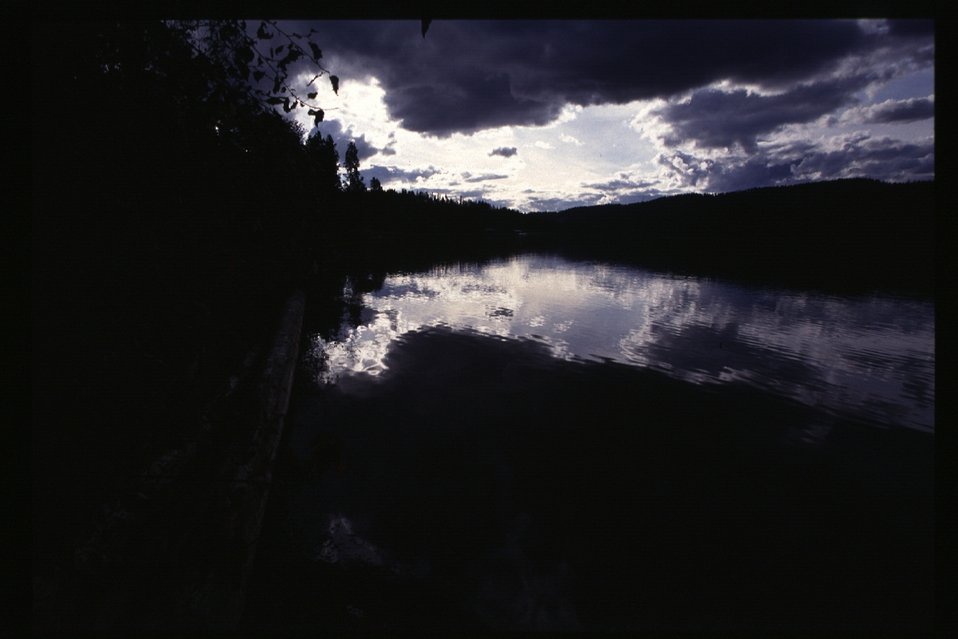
Scenic Cougar Bay Couer d'Alene Field Office UCSC Upper Columbia Salmon Clearwater District